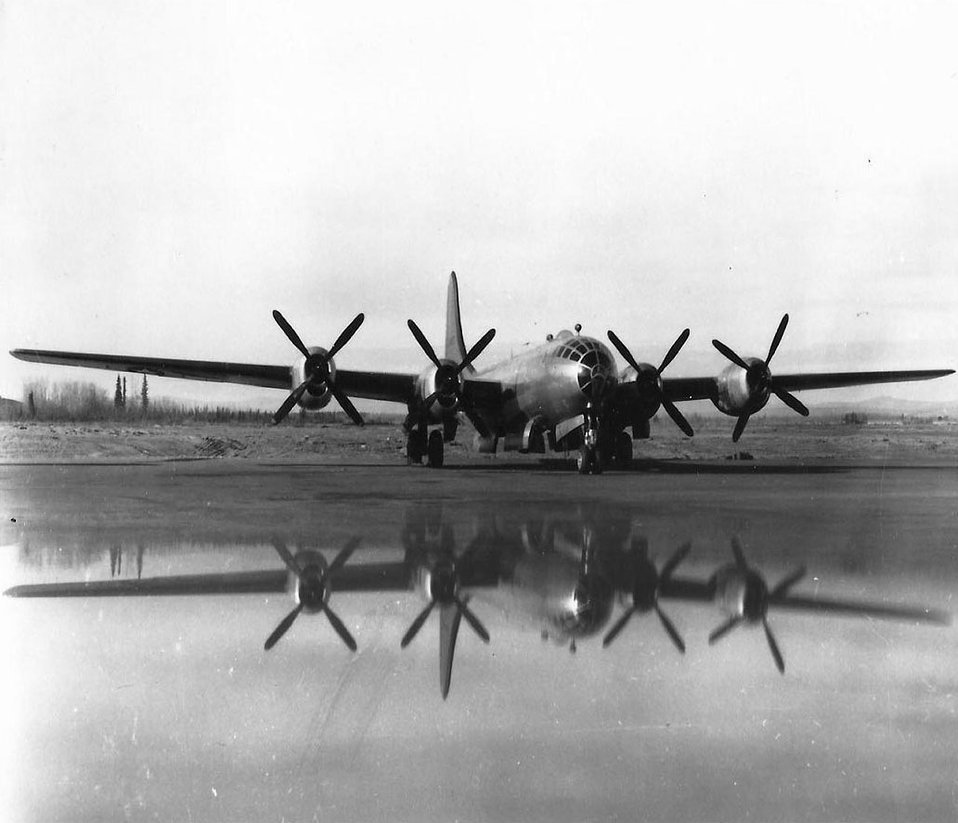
Arctic first

The F-13 that carried then-Maj. Maynard E. White, commander of the 46th Reconnaissance Squadron, and other Airmen, as well as military scientists, over the North Pole. This photo was taken just prior to its crash landing May 29, 1947.